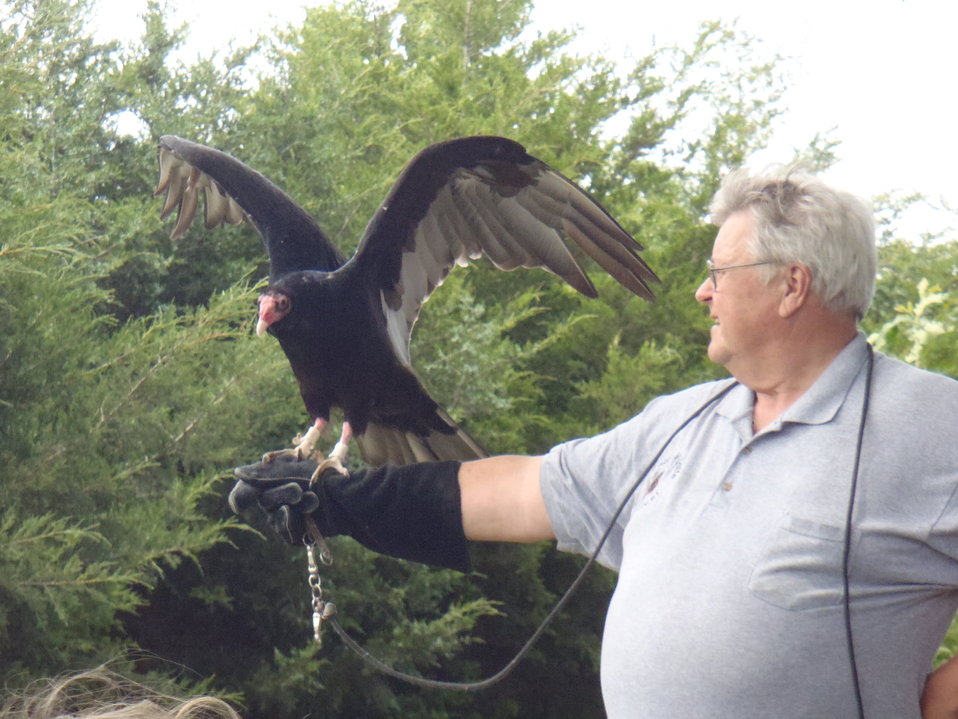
International Migratory Bird Day 2012

Marais des Cygnes National Wildlife Refuge with Operation Wildlife Presentation